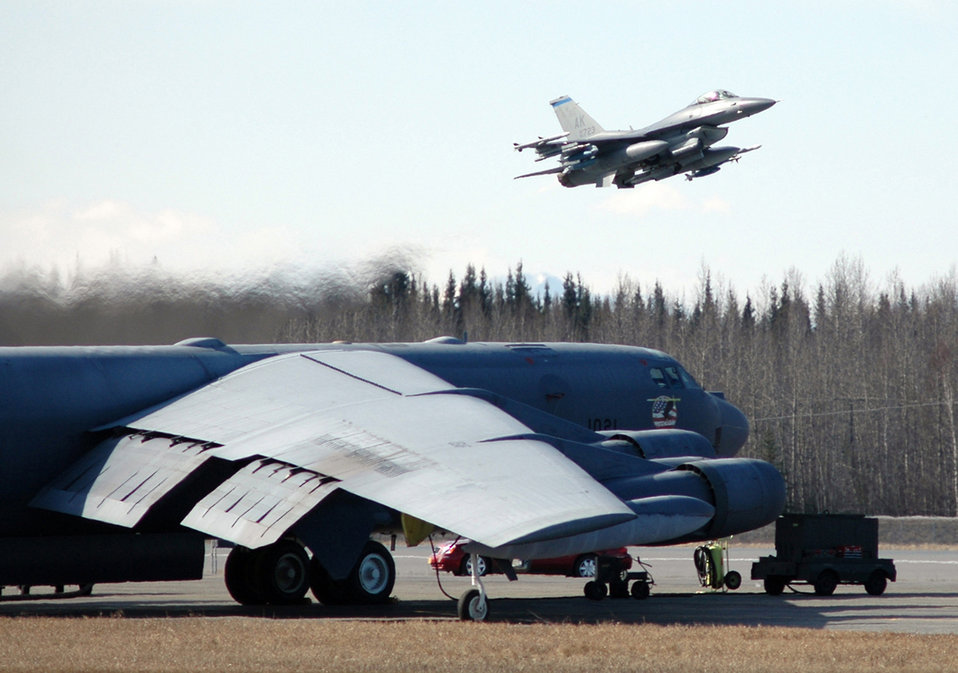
RED FLAG - Alaska 06-2

A B-52 Stratofortress is readied for flight as an F-16 Fighting Falcon takes off from Eielson Air Force Base, Alaska, on Tuesday, April 25, 2006. The B-52 is from Barksdale AFB, La., and the F-16 is from the 18th Fighter Squadron at Eielson.